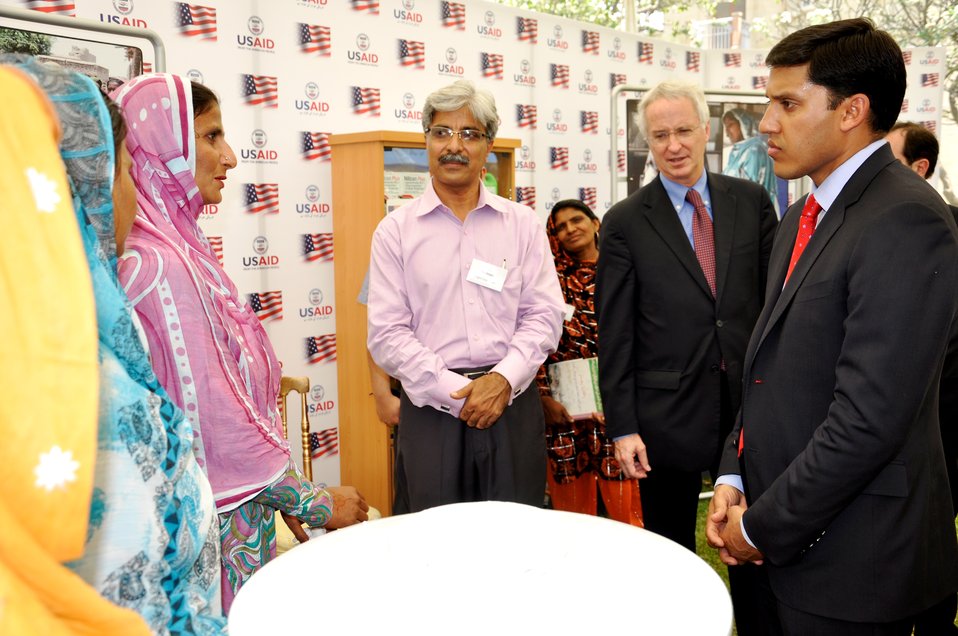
The Entrepreneurs Project [Dairy sector beneficiaries] while interacting with Dr. Shah